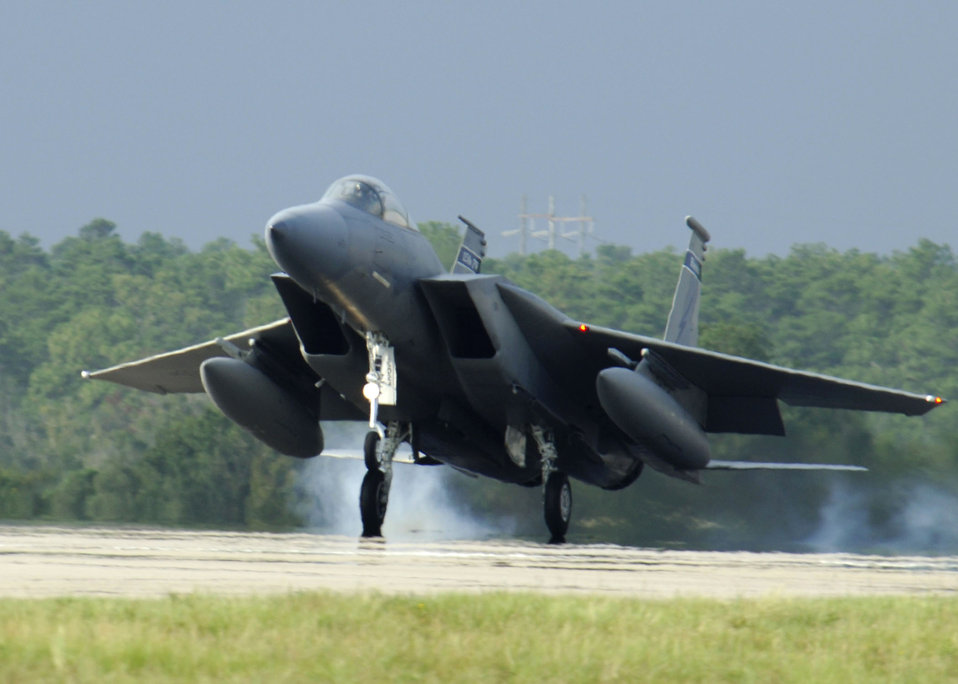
Ernesto evacuation

One of seven F-15 Eagles from the Florida Air National Guard's 125th Fighter Wing arrives at Eglin Air Force Base, Fla., Aug. 29. The aircraft were evacuated from Jacksonville International Airport because of Tropical Storm Ernesto.